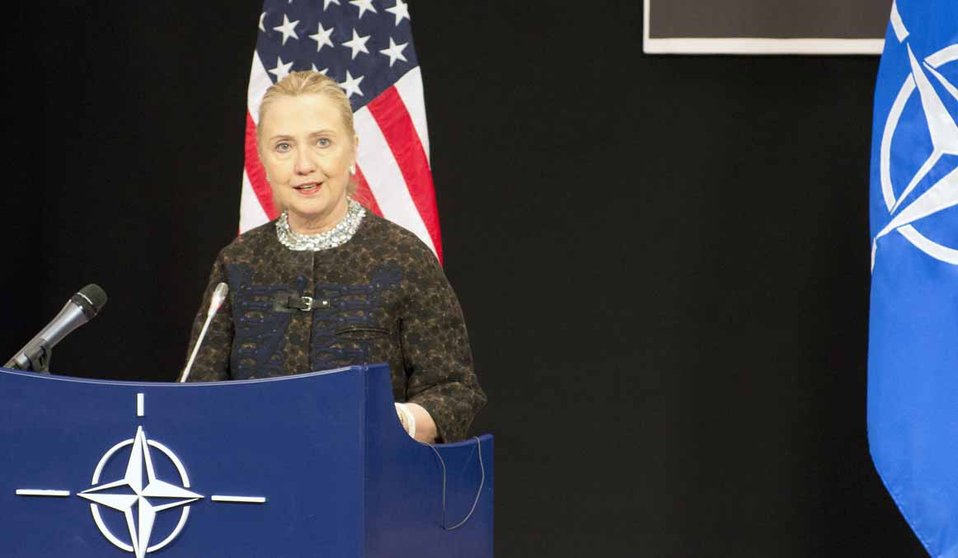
Secretary Clinton Addresses Reporters at NATO Headquarters

U.S. Secretary of State Hillary Rodham Clinton addresses reporters at NATO Headquarters in Brussels, Belgium, December 5, 2012.